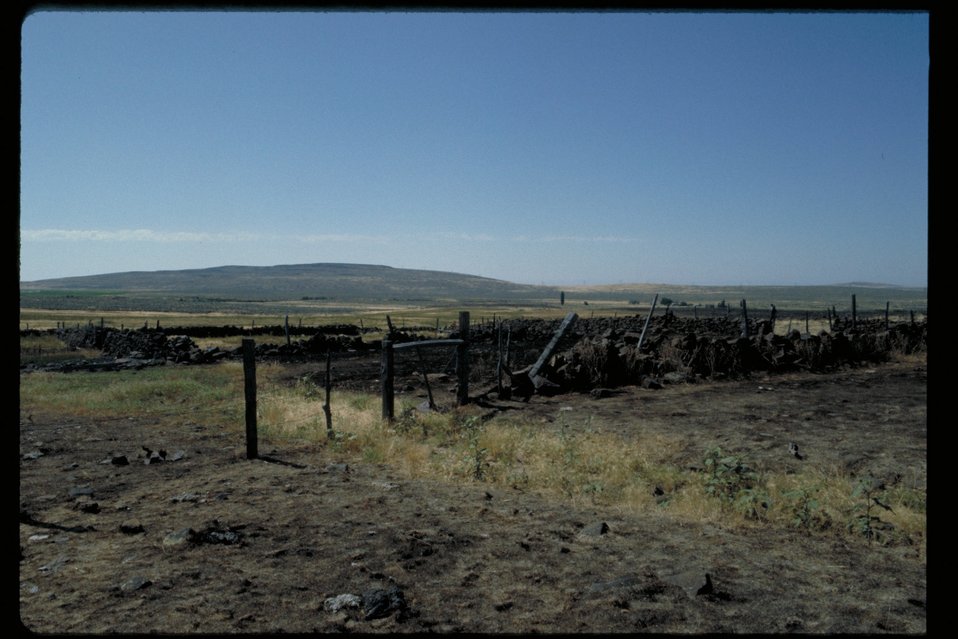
Oregon Trail Rock corrals west of Rattlesnake Creek Lower Snake River District